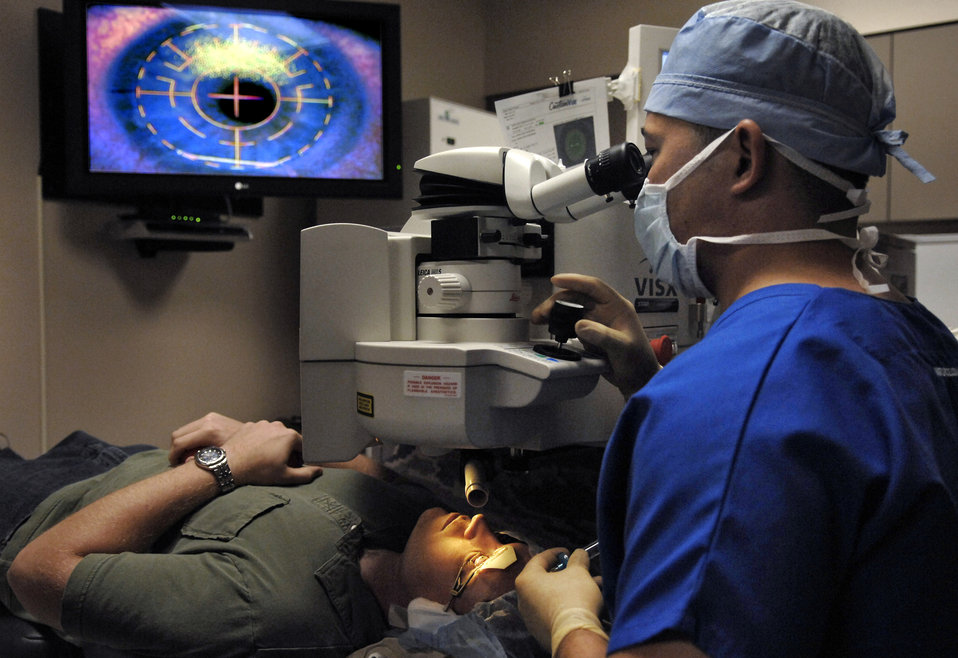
Wilford Hall opens Joint Warfighter Refractive Surgery Center

Lt. Col. Charles Reilly performs laser eye surgery on Senior Airman John Paul Marsh Aug. 23 at the newly opened Defense Department Joint Warfighter Refractive Surgery Center at Lackland Air Force Base, Texas. Colonel Reilly is the chief of the Warfighter Refractive Surgery Center and Airman Marsh is with the Air Force Band of the West.